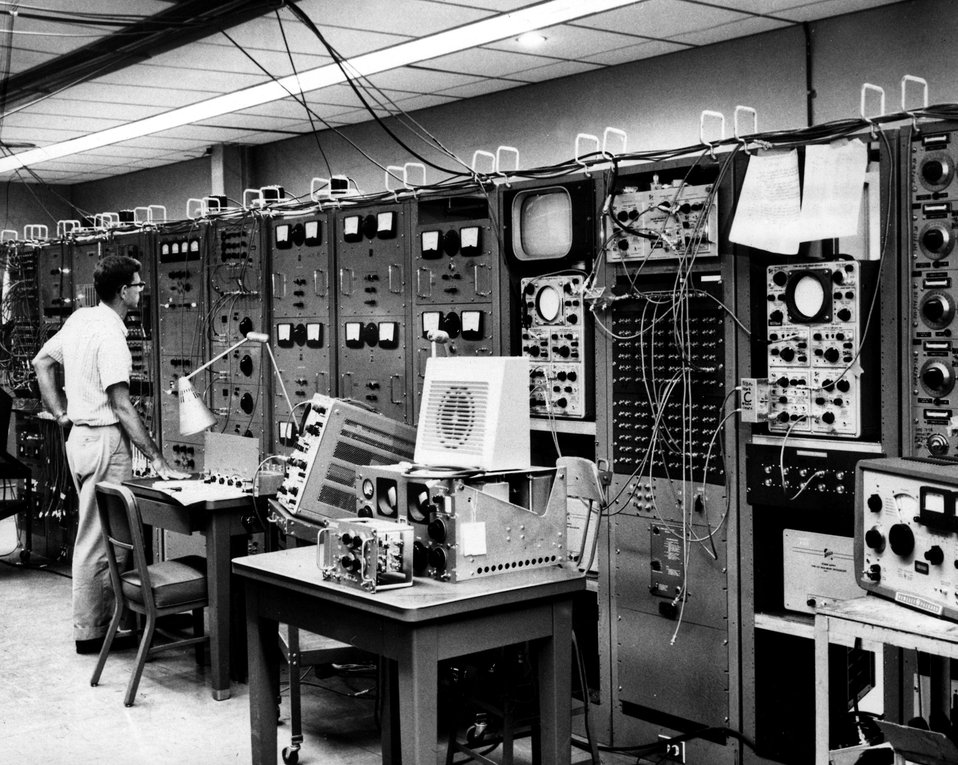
Main control room for the Alternating Gradient Synchrotron. c. 1962